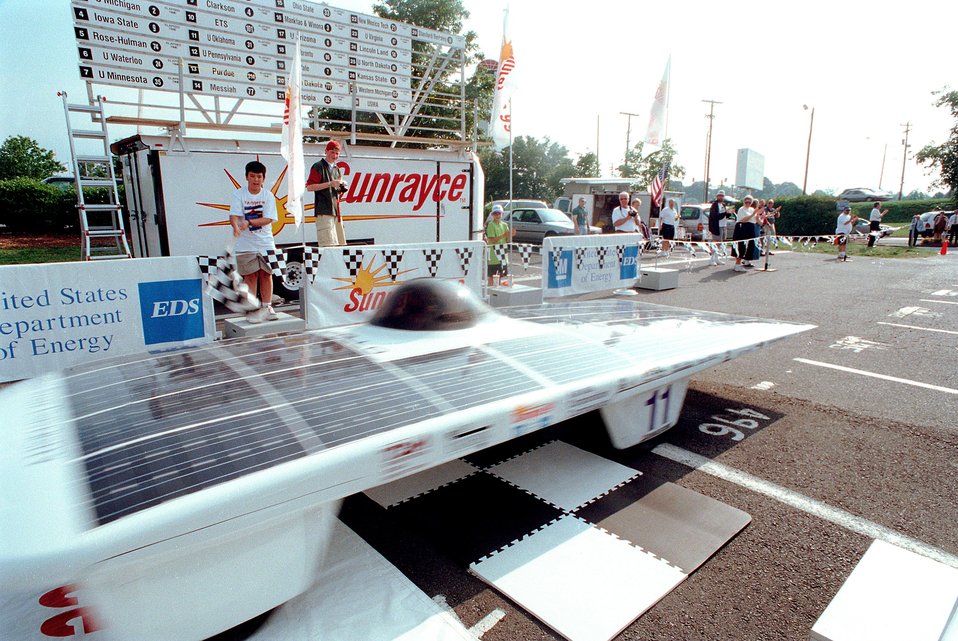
#31 UNIVERSITY OF OKLAHOMA CAR BEING FLAGGED IN.

SUNRAYCE 1999 STARTED IN WASHINGTON, DC, JUNE 20, 1999 AND WAS COMPLETED ON JUNE 29, 1999 AT DISNEY WORLD IN FLORIDA. DOE HELPS TO SPONSOR THE SUNRAYCE AS PART OF ITS COMMITMENT TO RESEARCH AND DEVELOPMENT OF CLEAN , COST EFFECTIVE, ENERGY EFFICIENT RENEWABLE ENERGY. THE SUNRAYCE BRINGS TOGETHER TEAMS OF STUDENTS FROM A WIDE RANGE OF DISCIPLINES, INCLUDING ENGINEERING, COMPUTER SCIENCE, PHYSICS, MARKETING AND GRAPHICS. STUDENTS MUST DESIGN, CONSTRUCT AND RACE THEIR SOLAR-POWERED VEHICLES, WITH FACULTY ACTING ONLY IN ADVISORY CAPACITY.